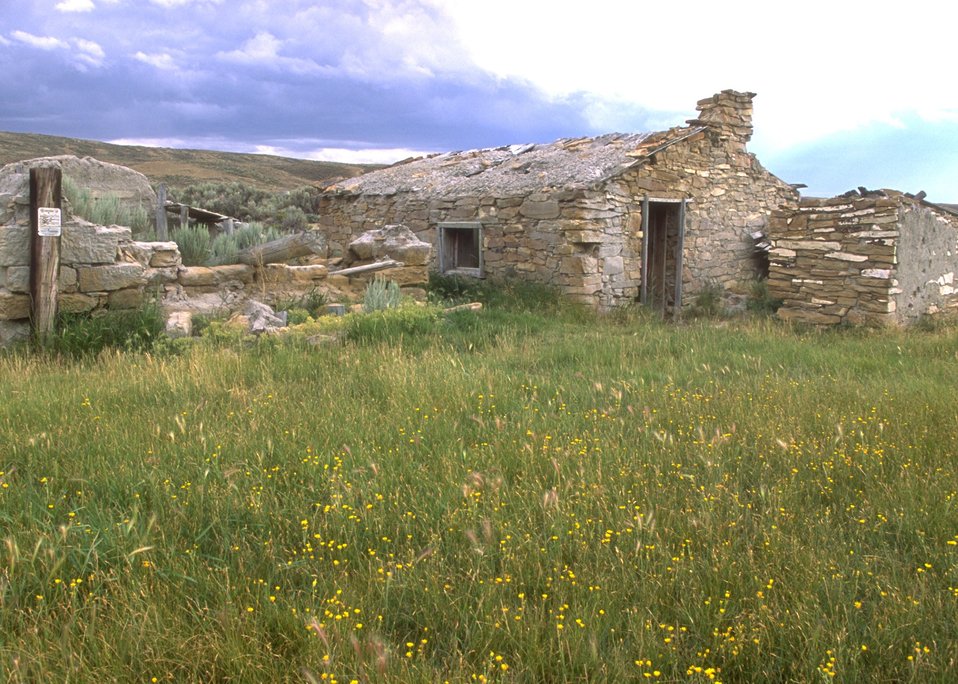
Historic Crookston Ranch near OHV Sand Dunes Area, Rock Springs Field Office